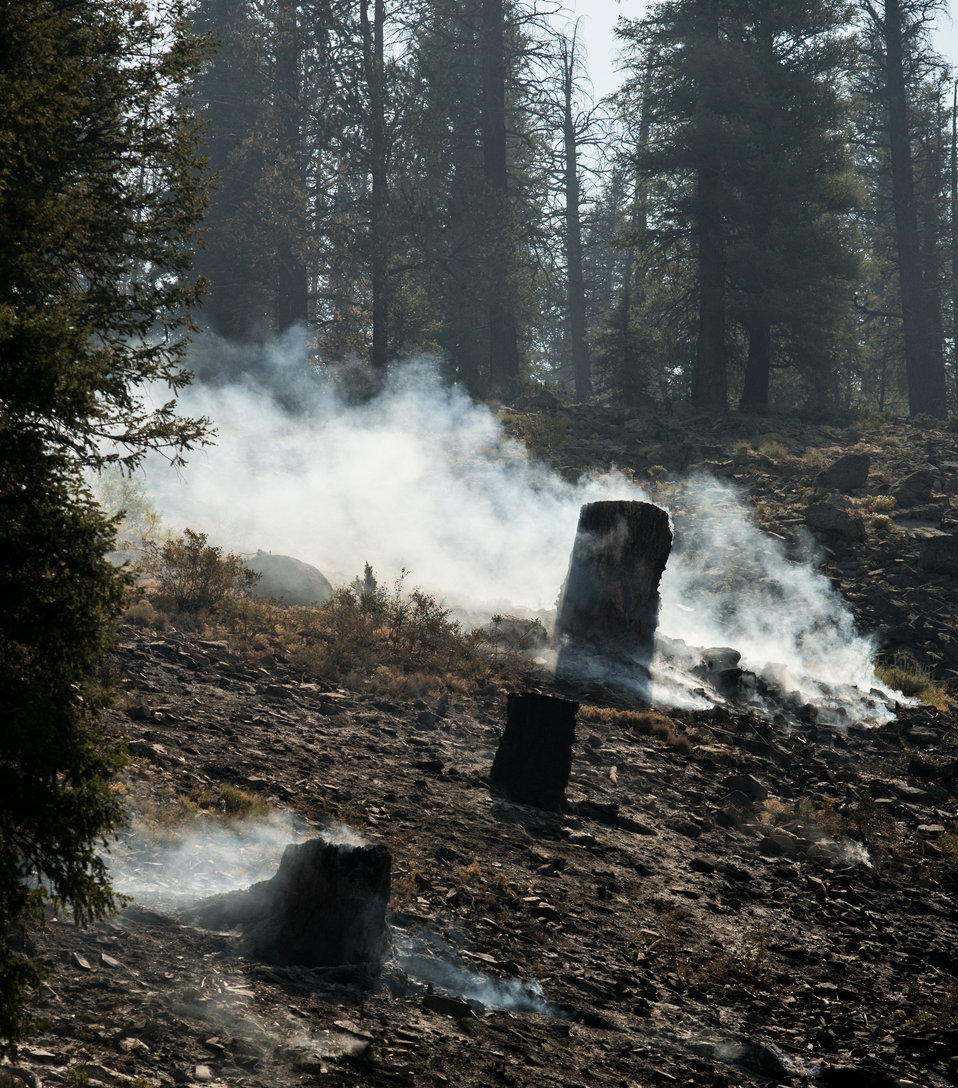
Beaver Creek Fire, west of Hailey, ID, on Tuesday, Aug 20, 2013.